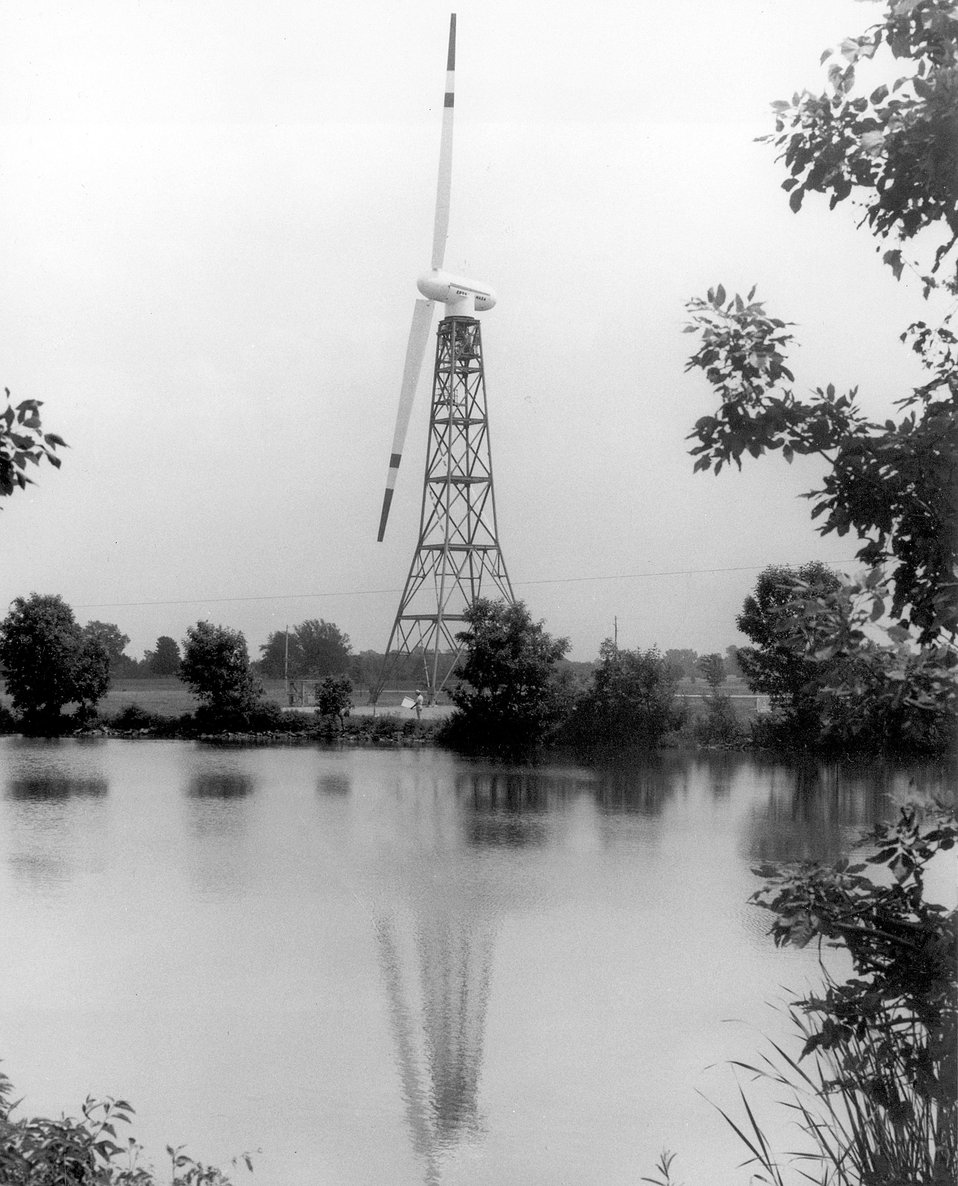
A 125-foot-tall windmill has been developed for the U.S. Department of Energy (DOE) by NASA's Lewis Research Center in Cleveland, Ohio. c. 1976